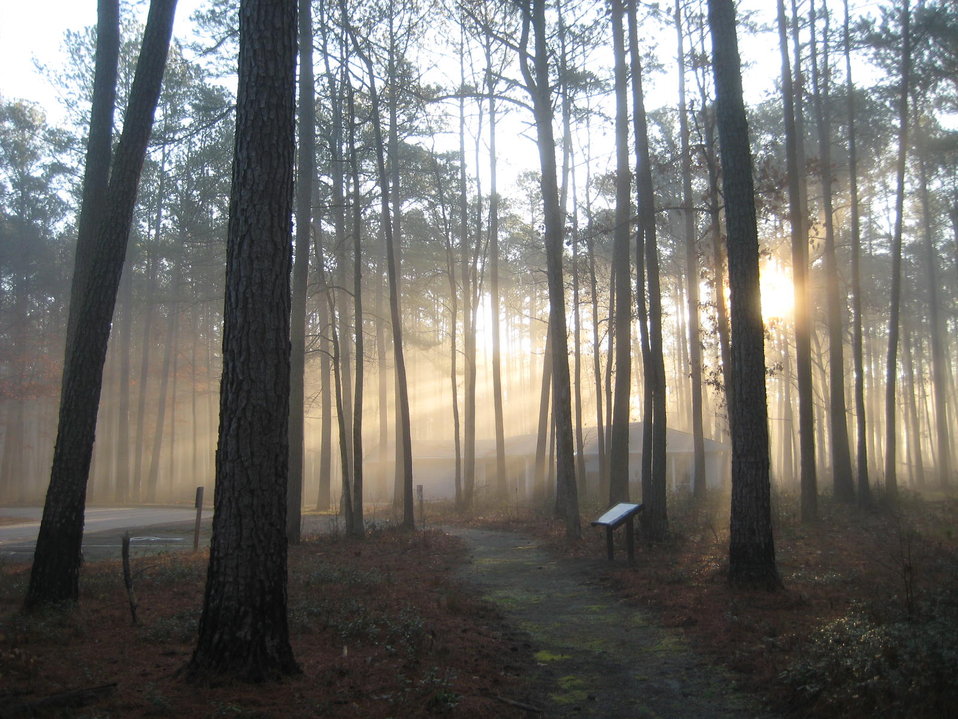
Sun through the trees

Great Dismal Swamp National Wildlife Refuge.